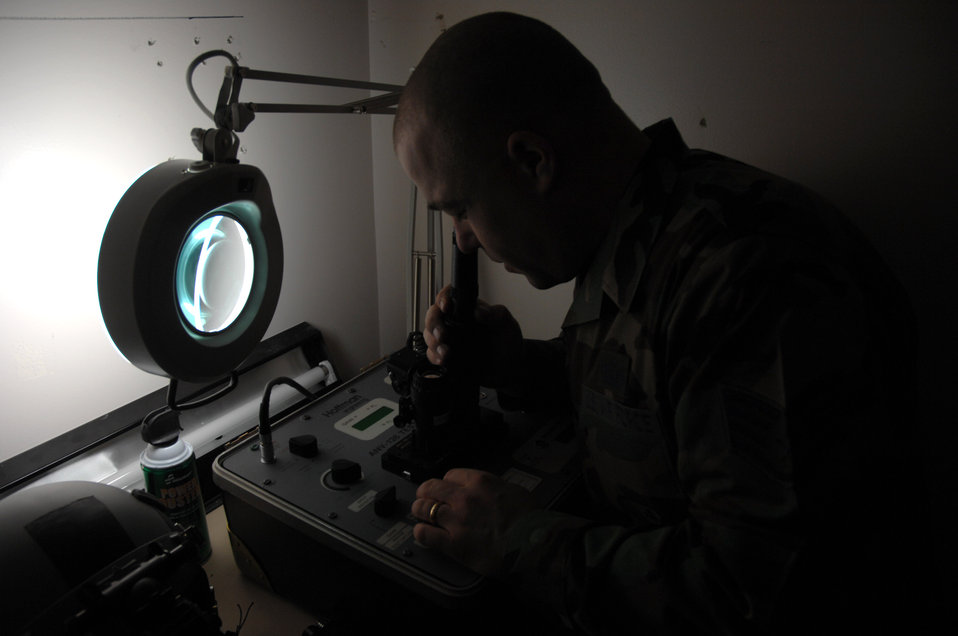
Seeing in the dark

Staff Sgt. Timothy Huffman checks for lens defects on a pair of AS/AVS-9 Night Vision Goggles in the life support section of the 355th Fighter Squadron Nov. 29 at Eielson Air Force Base, Alaska. During the winter months, pilots at Eielson AFB are given a greater opportunity to train with NVG's more than their counterparts in the lower 48 states due to the decreased length of sunlight.